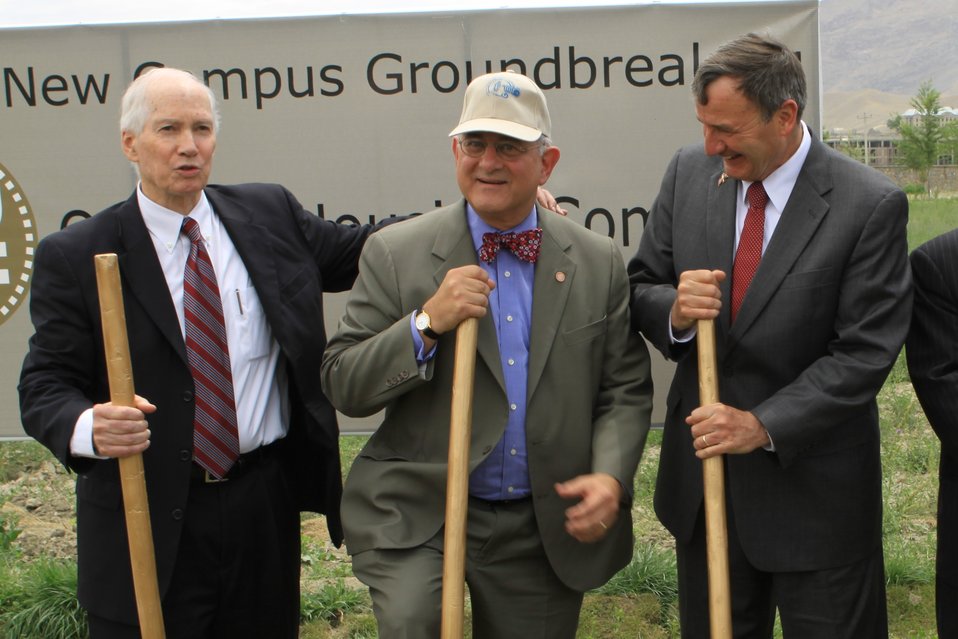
100526 AUAF Graduation 408